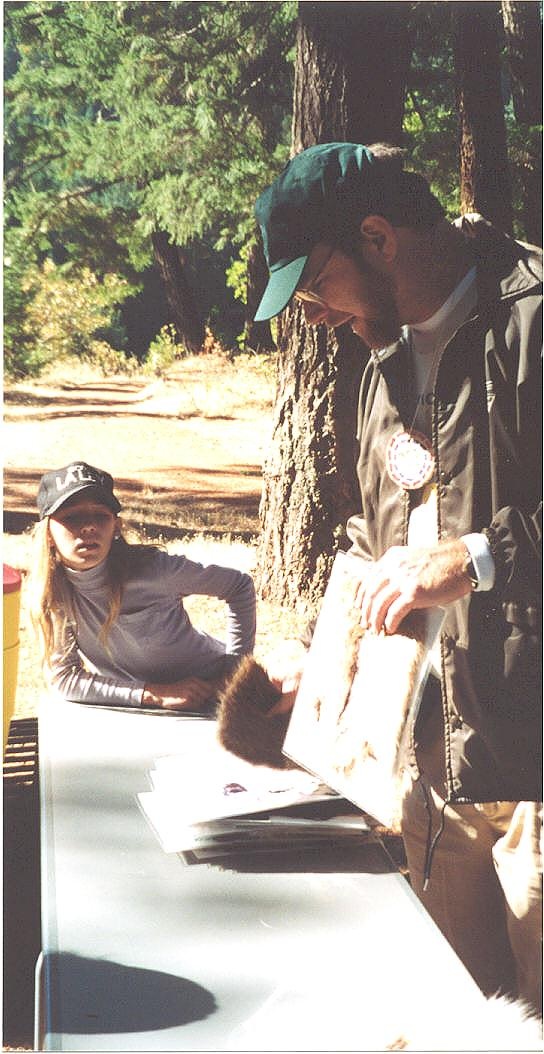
Public Lands Day fossil demonstration by Joe Ross.